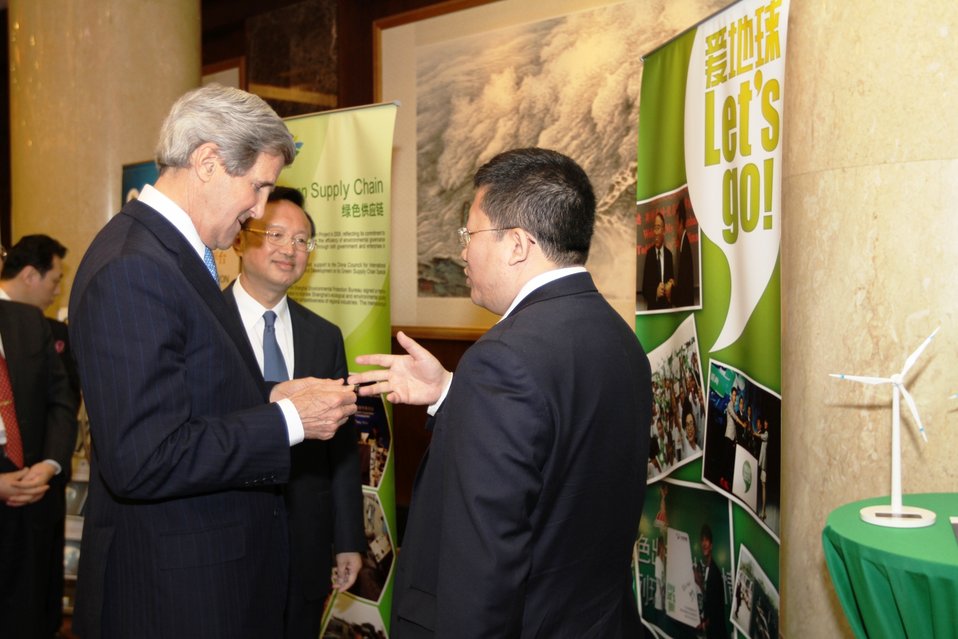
Secretary Kerry Tours Exhibit of Energy and Environmental Projects by U.S. and Chinese Companies

U.S. Secretary of State John Kerry and Chinese State Councilor Yang Jiechi explore interactive exhibits highlighting energy and environmental projects by U.S. and Chinese companies in Beijing, China, on April 13, 2013.